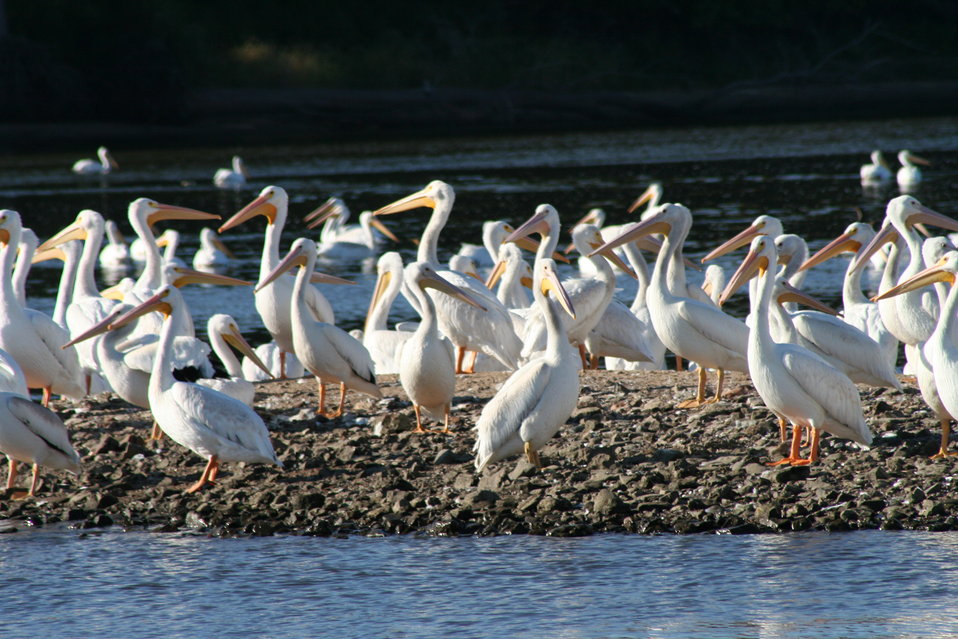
Pelicans on gravel bar in Mississippi River near Keokuk, Iowa.